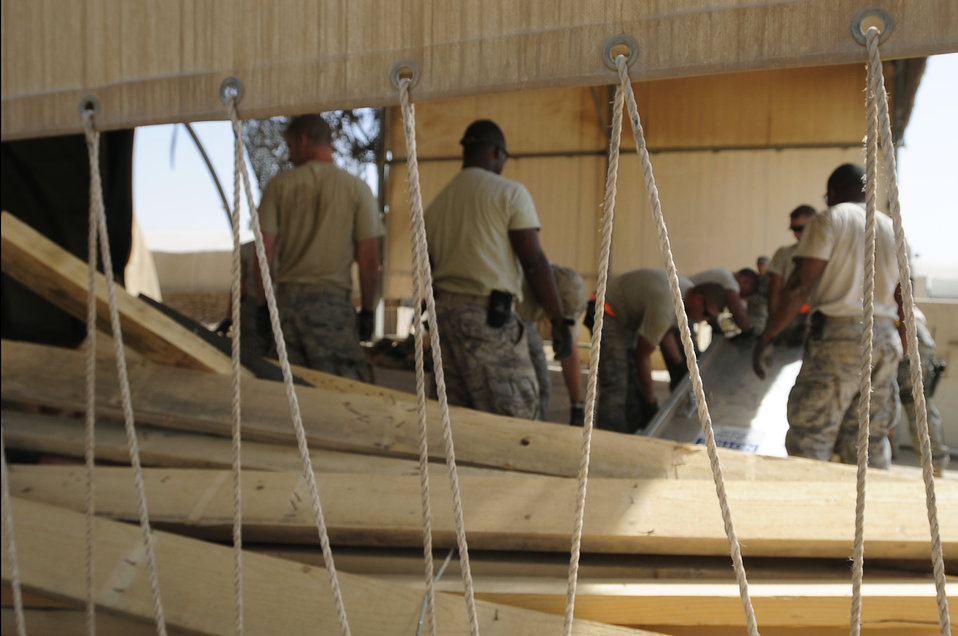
Reconstitution of materials supports fight, saves money

Members of the 407th Expeditionary Civil Engineer Squadron take down a tent structure Sept. 30, 2009, at Ali Base, Iraq. Squadron members are downsizing and consolidating material and equipment to send to U.S. warfighters in Afghanistan.